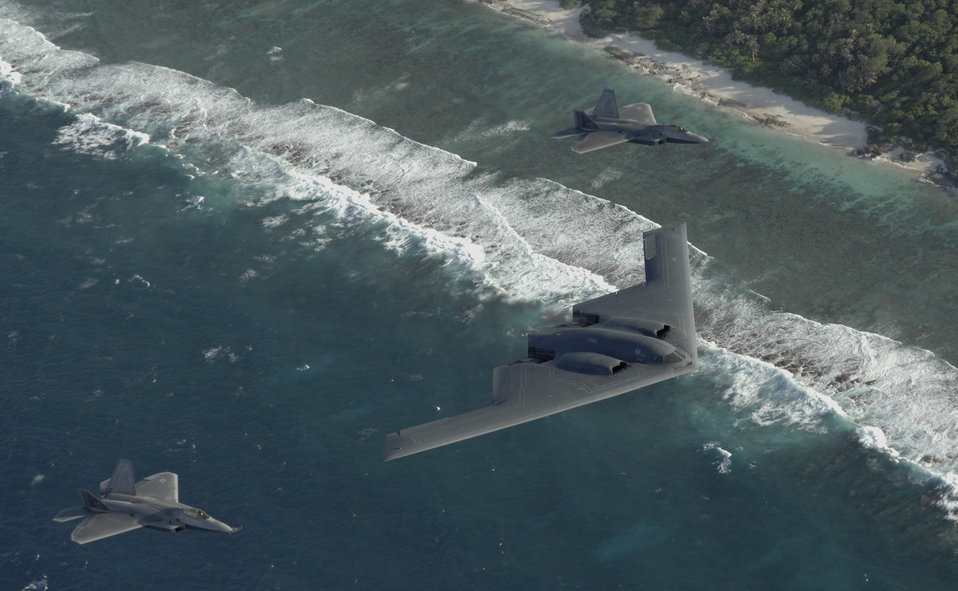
Stealth-y patrol

Two F-22 Raptors and a B-2 Spirit bomber deployed to Andersen Air Force Base, Guam, fly in formation over the Pacific Ocean. The deployment to Andersen marks the first time F-22s and B-2s, the key strategic stealth assets in the Air Force inventory, deployed together outside the continental United States.